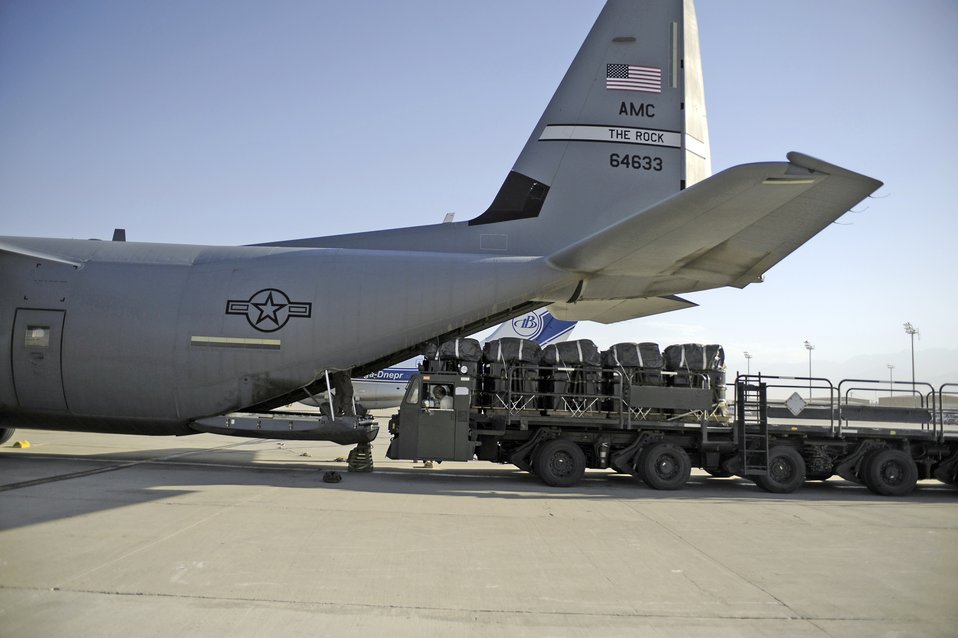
C-130J Super Hercules

Pallets of JP-8 fuel rigged for an airdrop are loaded into the cargo bay of a C-130J Super Hercules July 17 at Kandahar Air Field, Afghanistan. The 772nd Expeditionary Airlift Squadron perform airdrops like this to provide much needed supplies to troops on the ground.